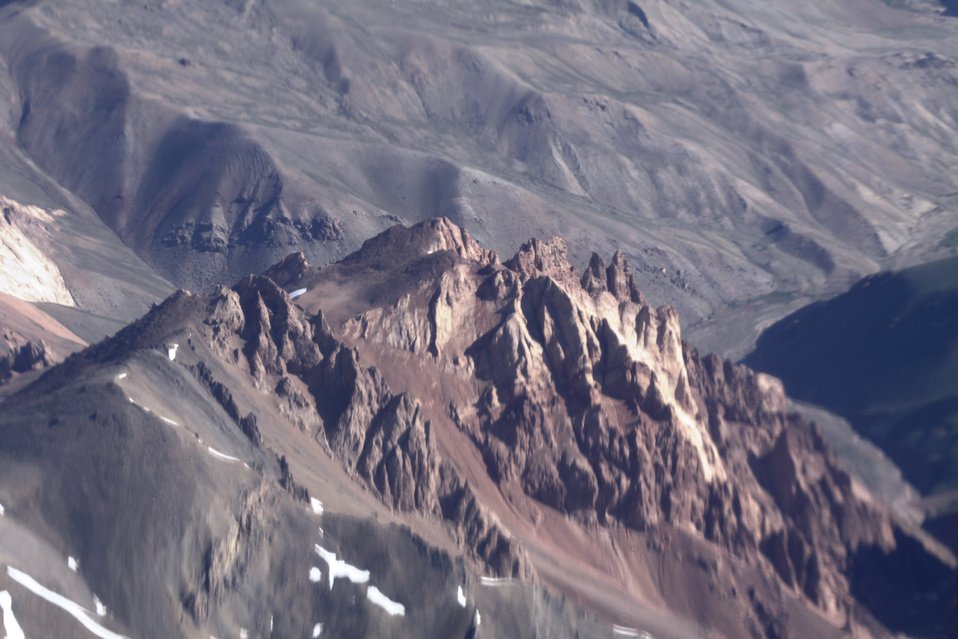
100525 Hirat Marble Conference 012